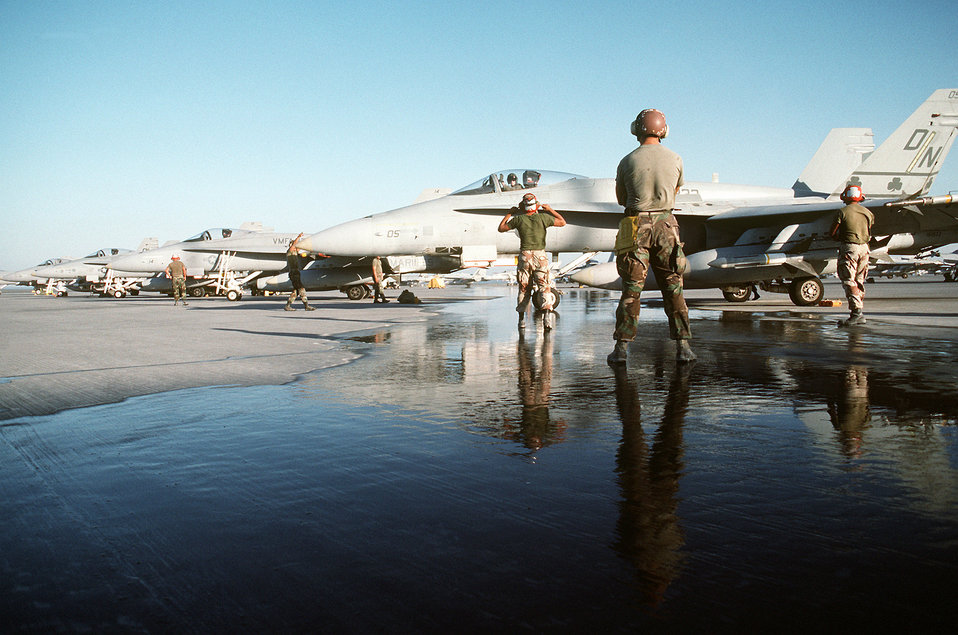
F/A-18 Hornet striker fighter

1990's -- The plane captain marshals an F/A-18 Hornet striker fighter aircraft from Marine Fighter-Attack Squadron 333 onto the taxiway during Operation Desert Shield. In the background are other Hornets from Marine squadrons.